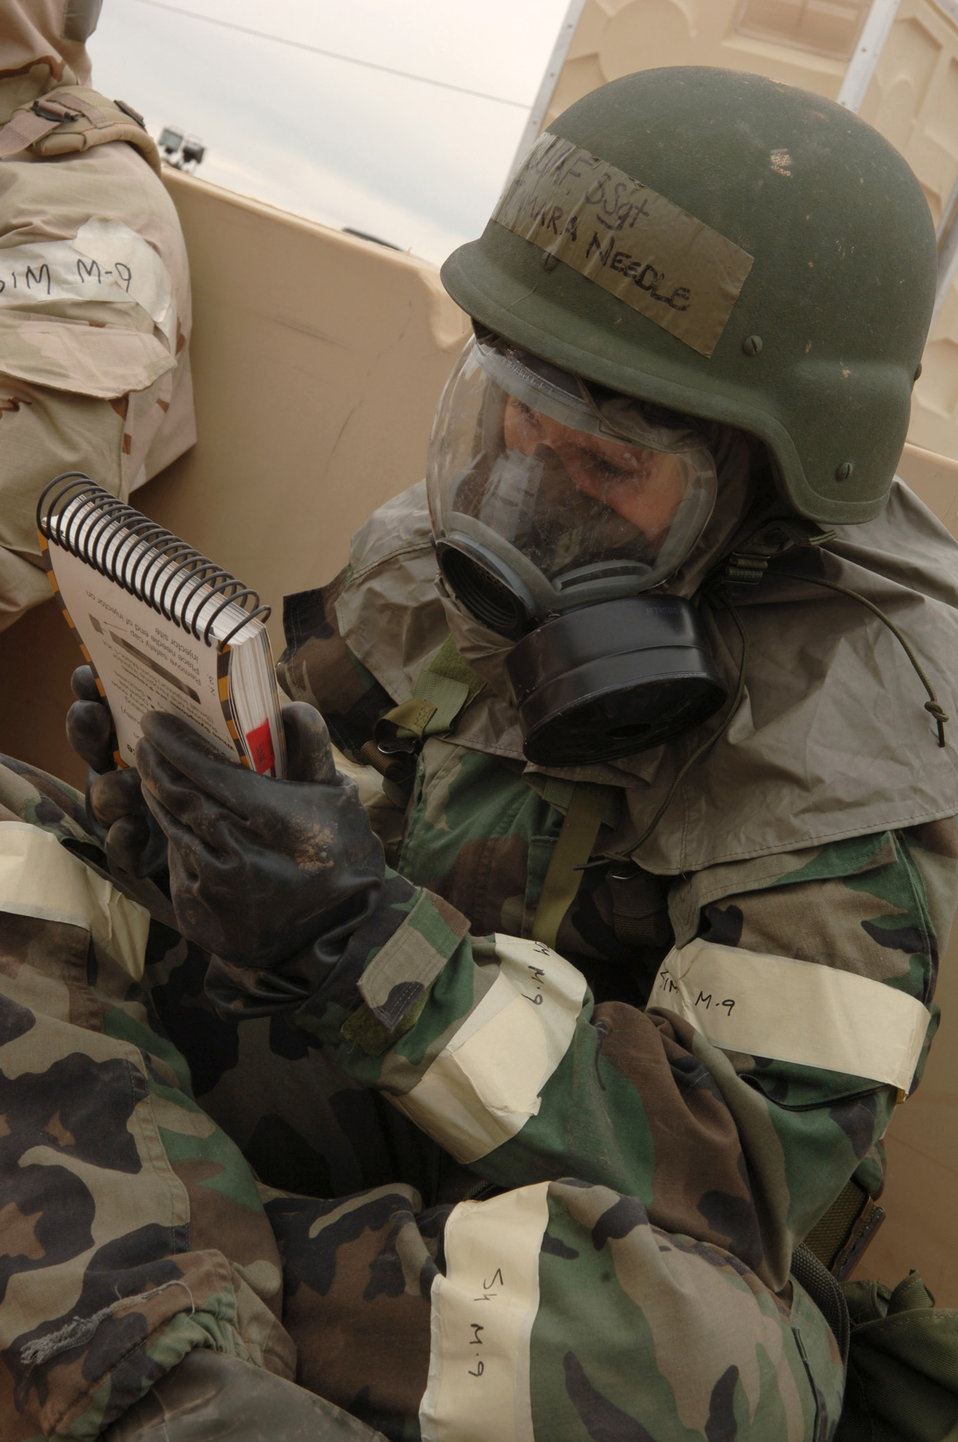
Preparing to deploy

Staff Sgt. Tamara Needle studies her Airman's manual as she takes cover in an improvised bunker during an exercise at a simulated deployed location on Tuesday, April 4, 2006. Sergeant Needle is with the 355th Communications Squadron.